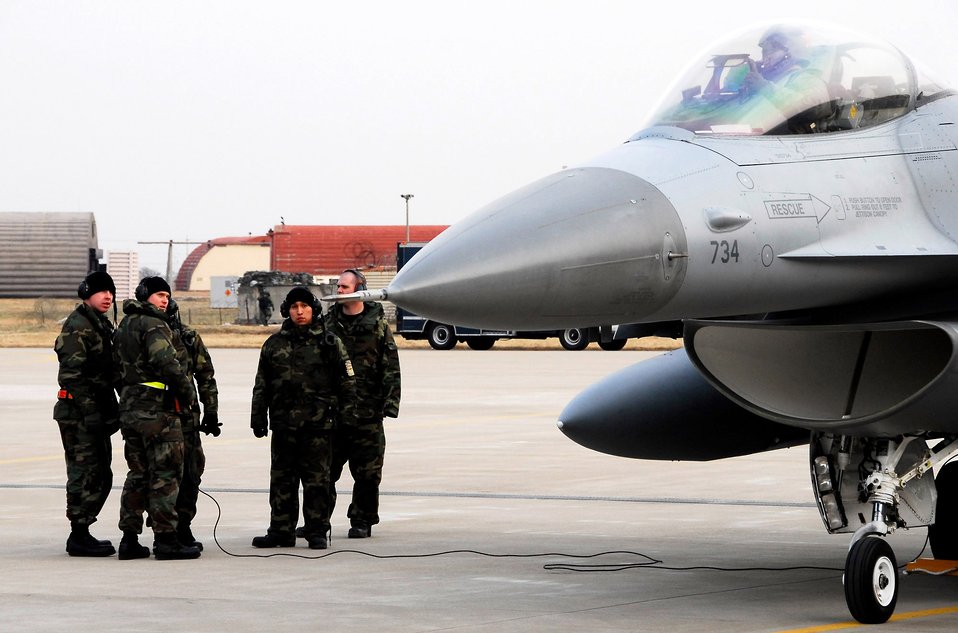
Kunsan, Eielson swap F-16s

Members of the 8th Aircraft Maintenance Squadron discuss in-flight errors with an 80th Fighter Squadron F-16 Fighting Falcon pilot at Kunsan Air Base, South Korea, after a Jan. 18 flight from Eielson Air Base, Alaska. The 80th Fighter Squadron will be receiving 18 Common Configuration Implementation Program Block 40 jets from the Alaskan-based unit and Eielson AFB will in-turn receive the 80th FS Block 30 jets for an aggressor squadron.